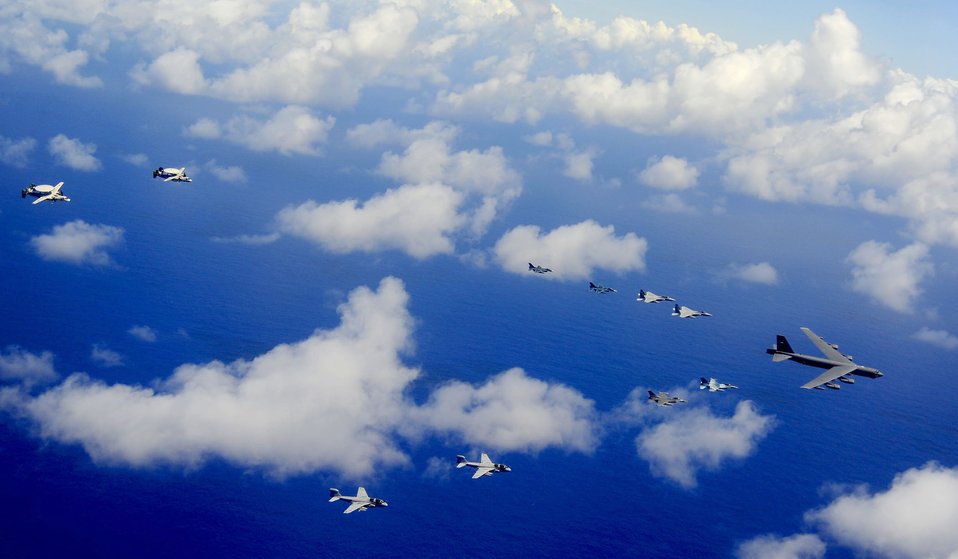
Airmen participate in exercise Cope North

A formation of aircraft flies over Guam Feb. 21, 2011, during exercise Cope North.